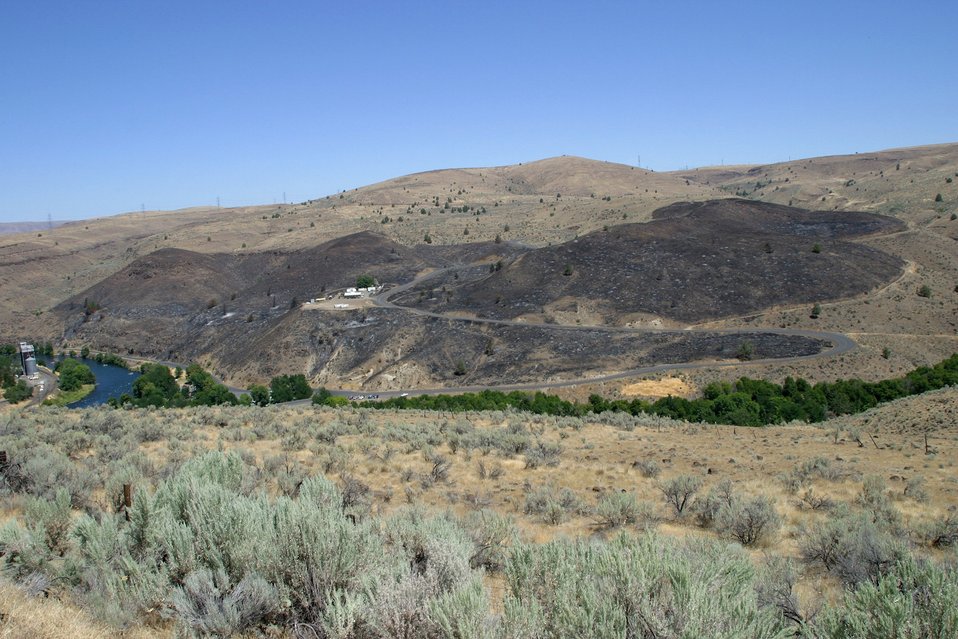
View of a fire east of Maupin with the BLM maintenance compound.